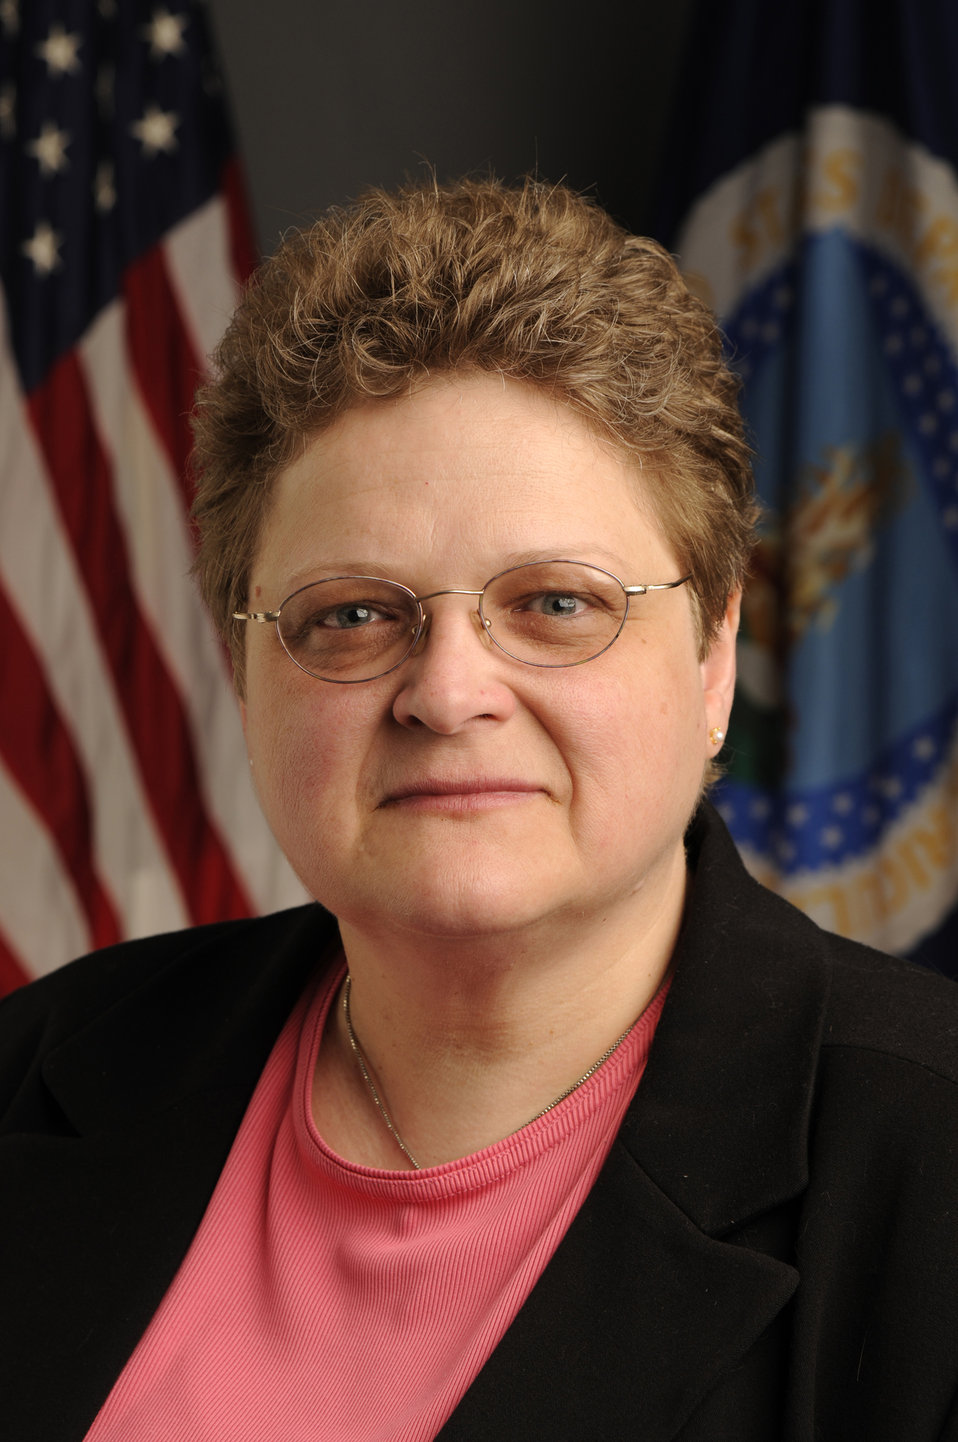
09di1063-03 Acting Chief Information Cheryl Cook

Portrait Acting Chief Information Cheryl Cook.